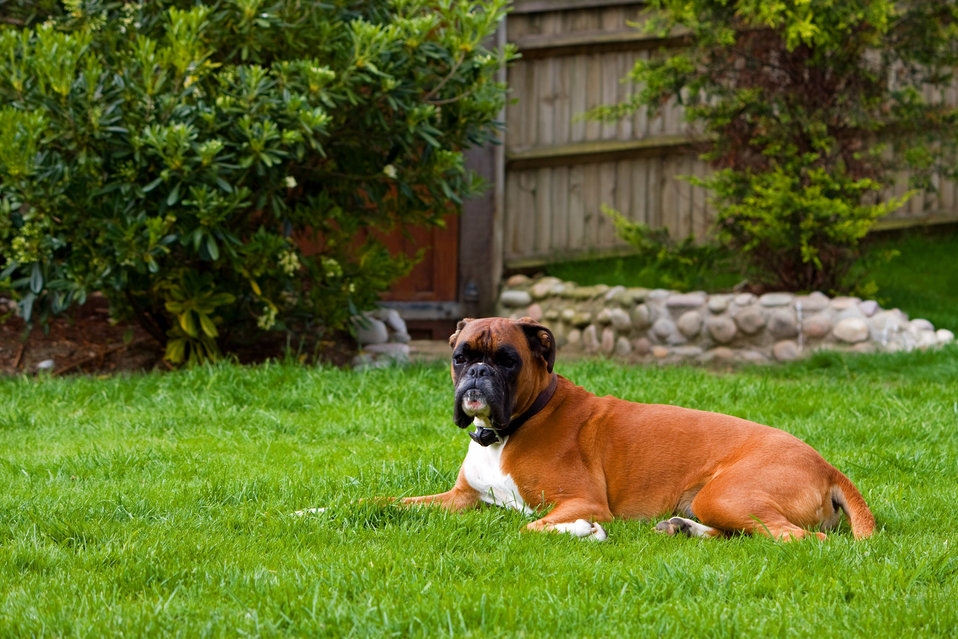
Boxer dog relaxing in the garden on the green grass.